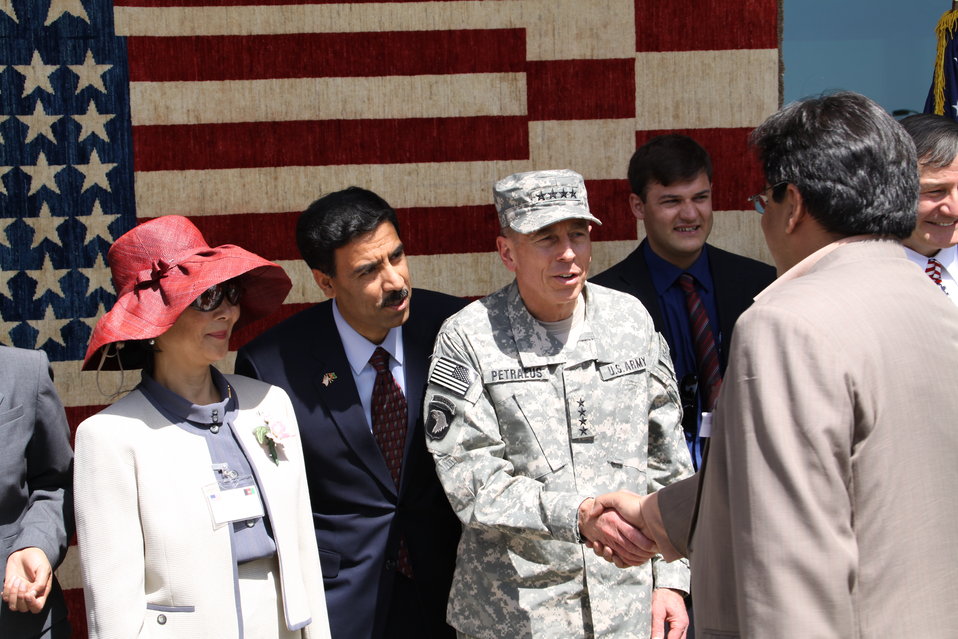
Kabul Official July 4th Celebration